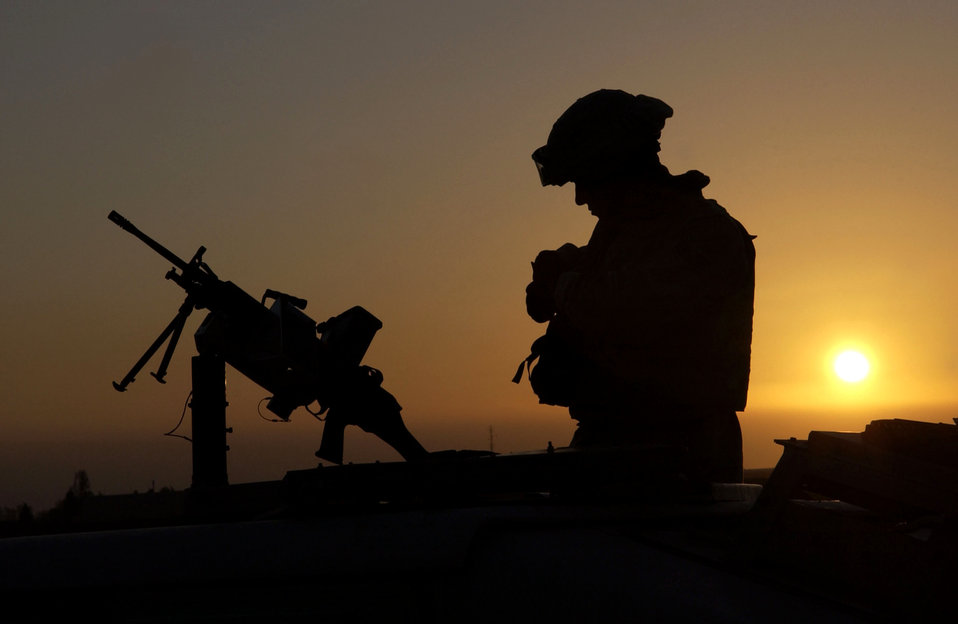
Ready and waiting

Senior Airman Chris Cabibi checks his gear before going out on patrol March 2 at Kirkuk Air Base, Iraq. Airman Cabibi provides an armed response capability to limit, counteract, and neutralize hostile action directed against the installation and its vital resources. He is with the 506th Expeditionary Security Forces Squadron.